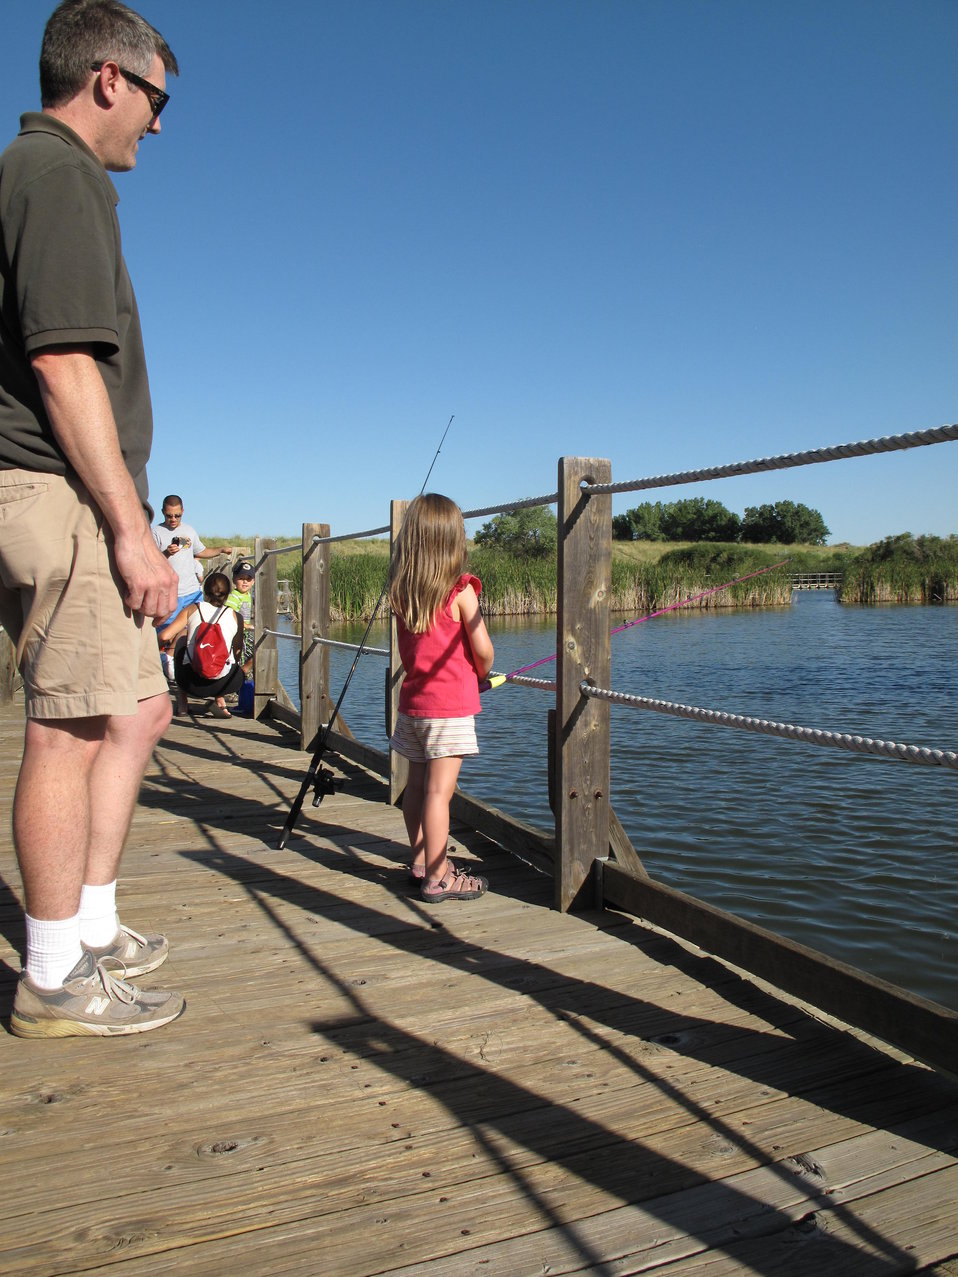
ELK fishing trip to RM Arsenal